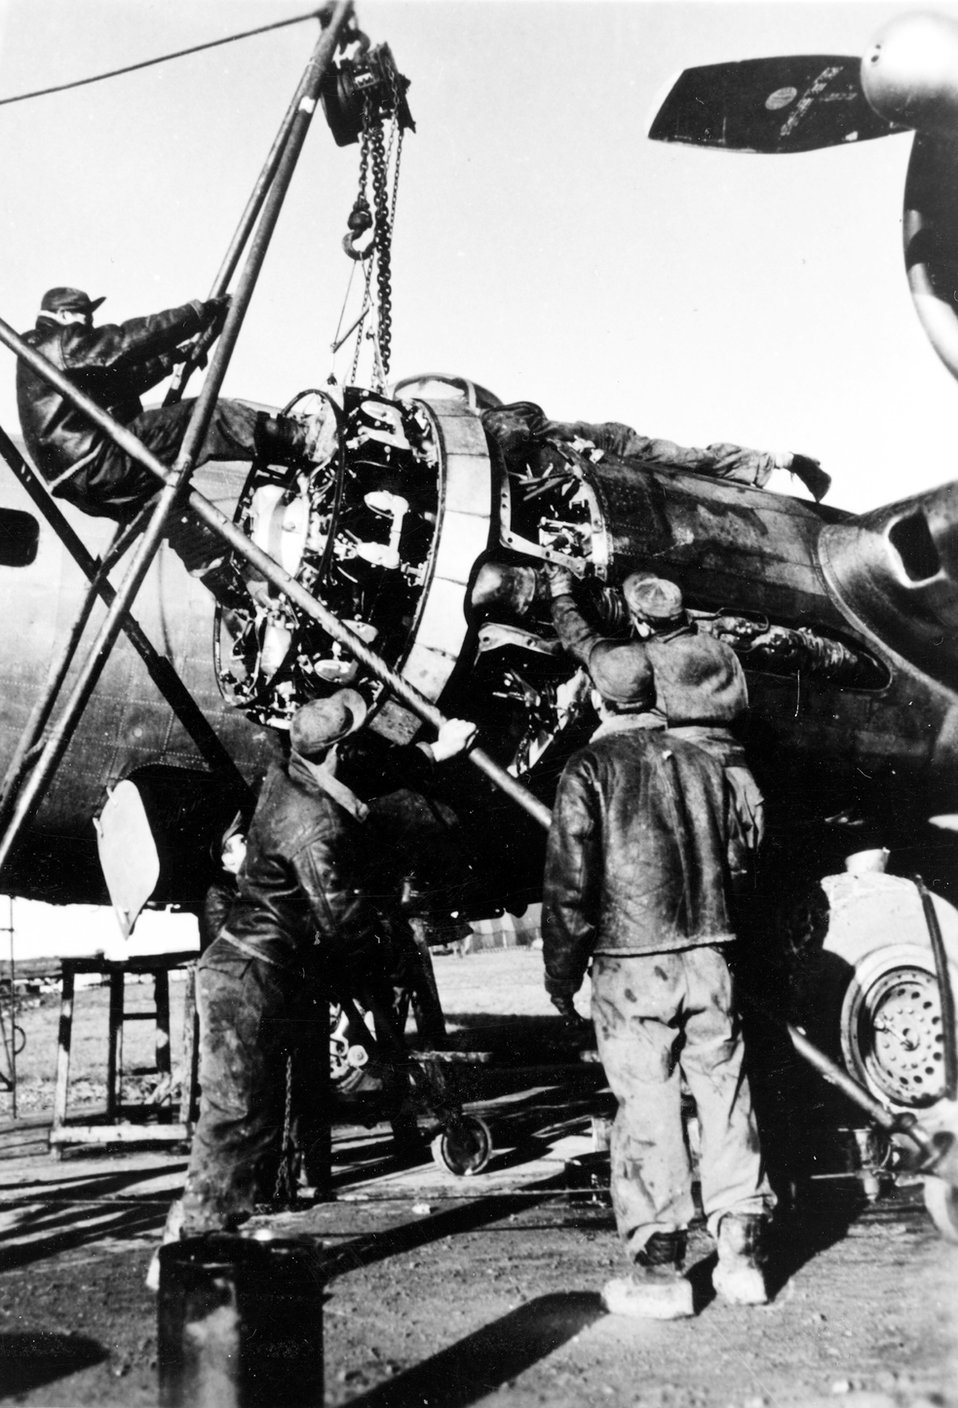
Living legends

NUTHAMPSTEAD, England -- Aircraft mechanics with the 398th Bombardment Group change a B-17 Flying Fortress engine here. During the group's stay in England from May 1944 to April 1945, the 398th flew 195 missions and lost 292 men and 70 B-17 aircraft in combat.